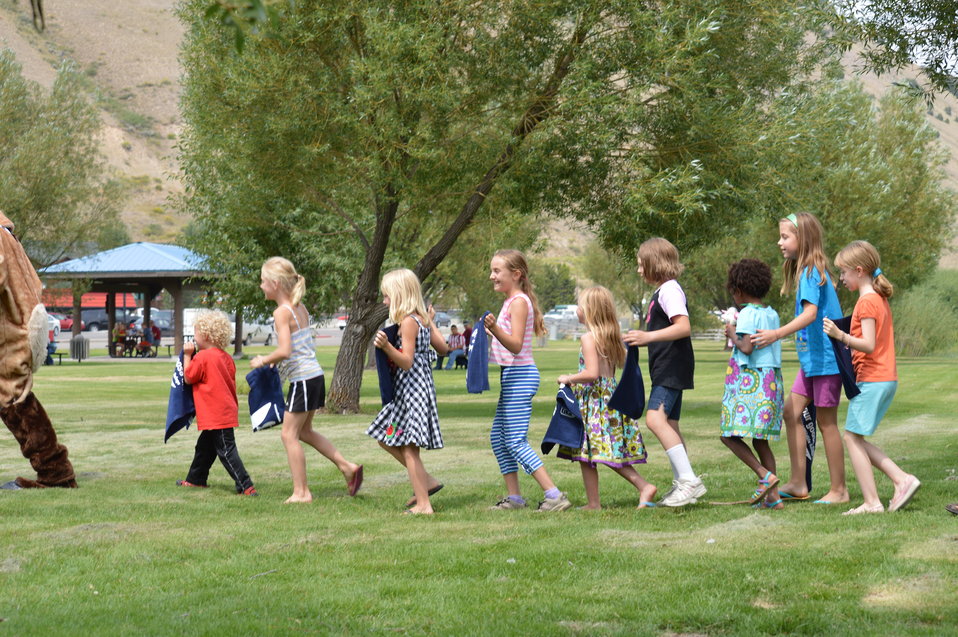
Get Your Goose On! - National Elk Refuge Style

On August 10, 2012 the U.S. Fish and Wildlife Service and Partners celebrated the 100 year anniversary of the establishment of the National Elk Refuge. In these photos, young attendees, along with Puddles the Blue Goose and the National Elk Refuge's mascot, showed us how to Get Your Goose On! with style.